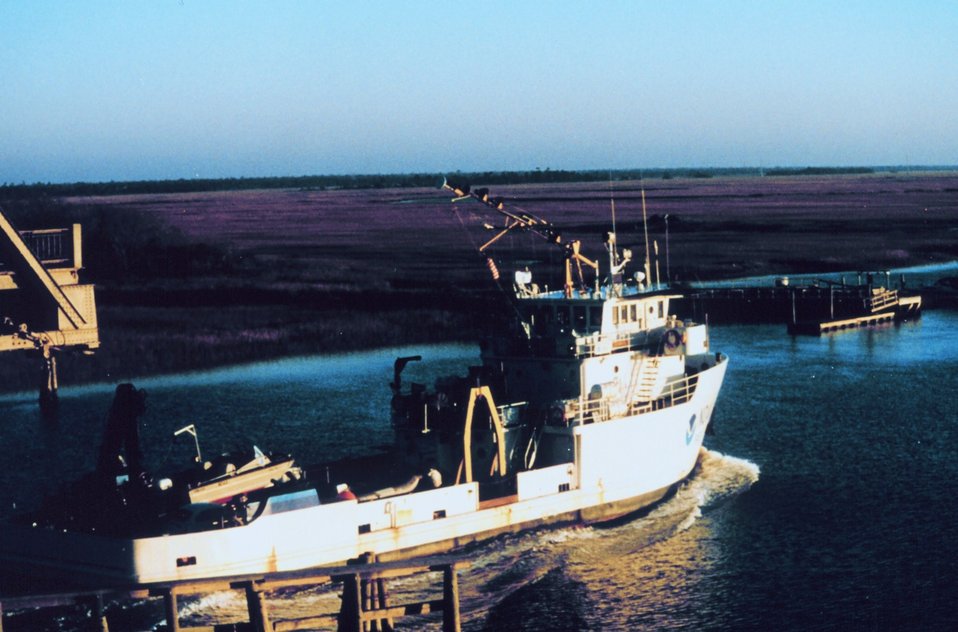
NOAA Ship FERREL in Intracoastal Waterway north of Charleston